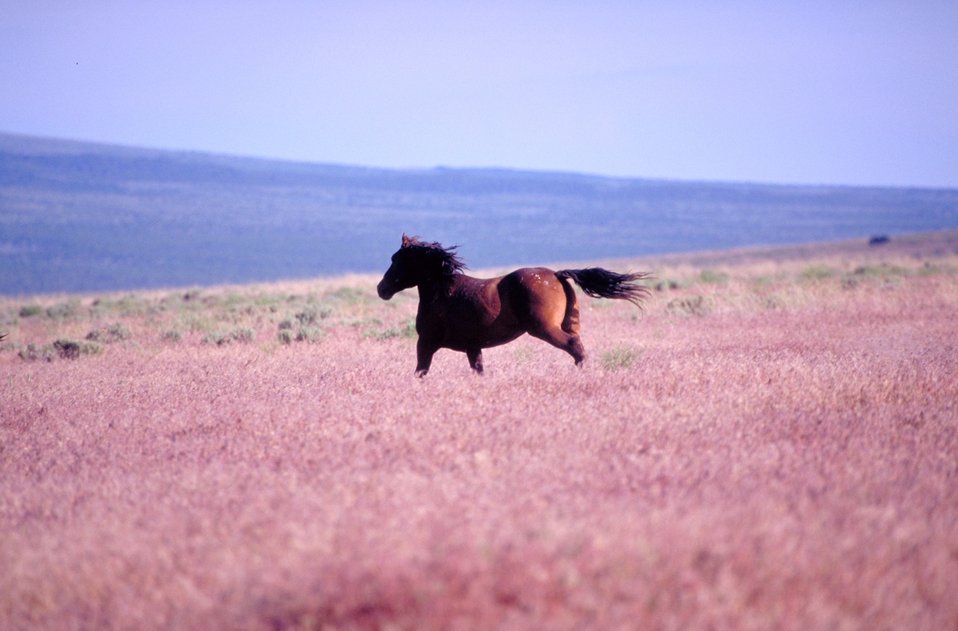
Onaqui Herd near Dugway, Utah.